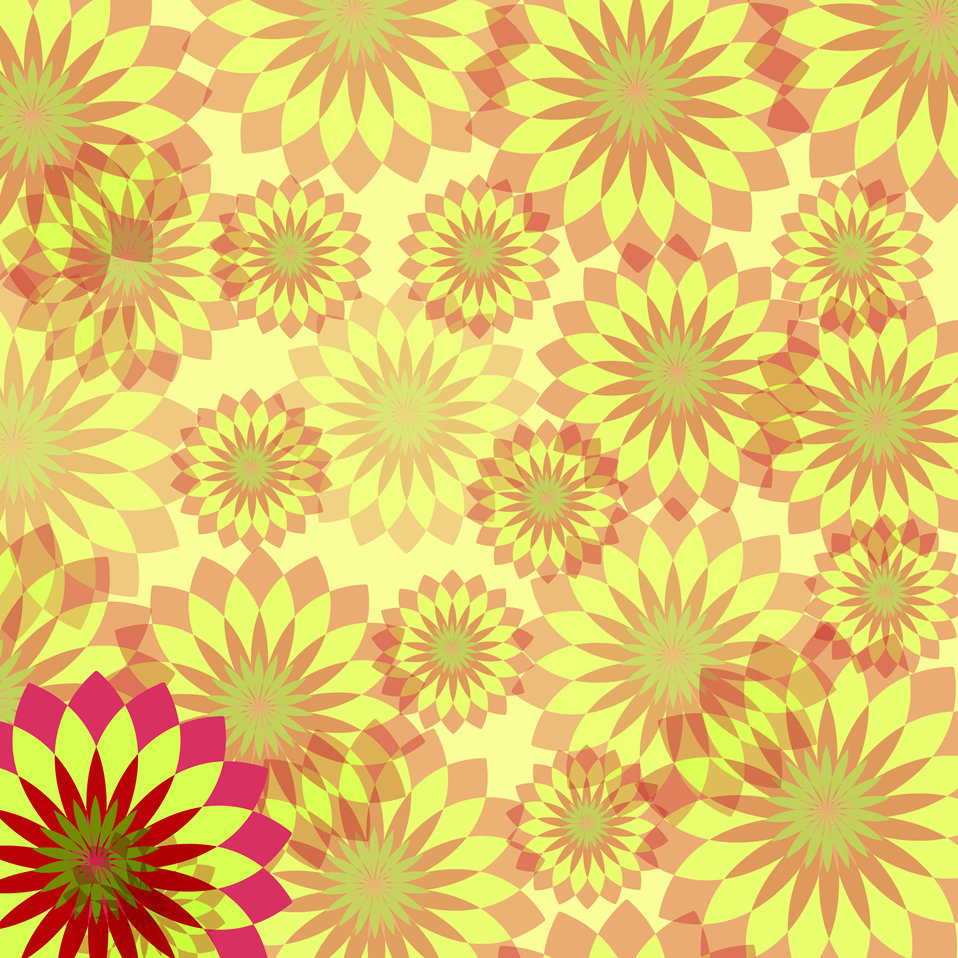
Flowery background

Summer flowery background created from radial pattern using energizing light colors.